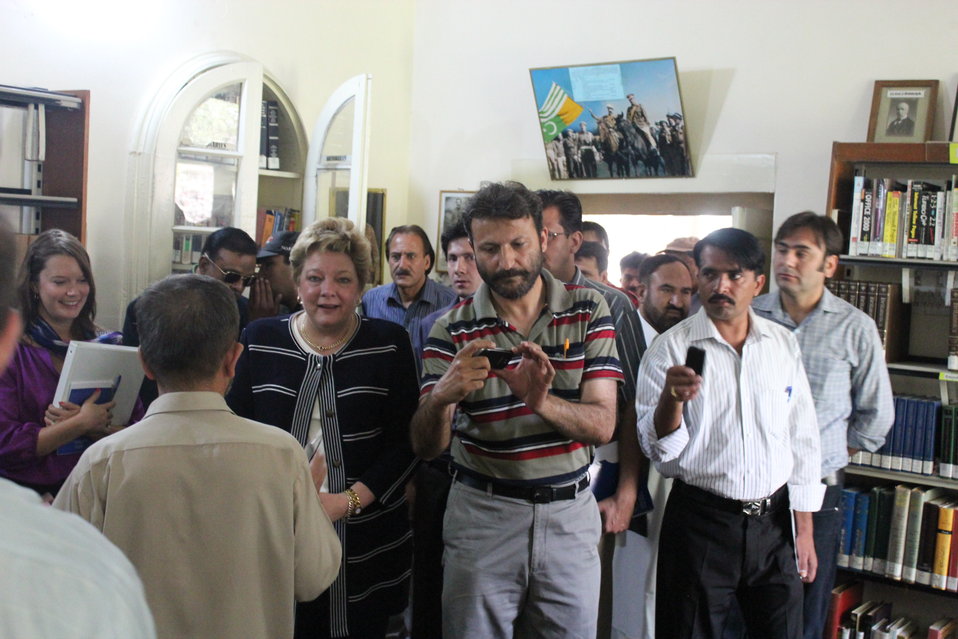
Deputy Director Karen Freeman’s visit to Gilgit Library

Karen Freeman visited the Municipal Gilgit Library on Monday, July 9. She was accompanied by other USAID staff and the staff from the Ambassador’s Fund Program. A the library, she met with Deputy Commissioner of Gilgit, Mr. Arqam and library staff, toured a photo display, and had an informal discussion with the library staff and community members about the USAID-funded project. Library staff showed the equipment funded by USAID (computers, internet, scanners, etc). The visit concluded by a Q & A session with media.